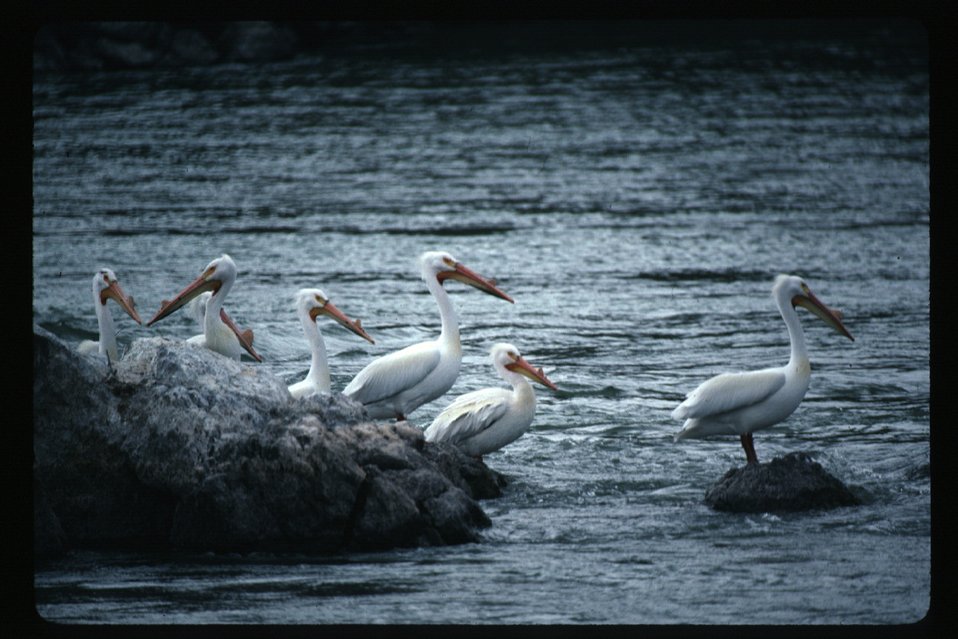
Pelicans on Snake River Wildlife USRD Upper Snake River District